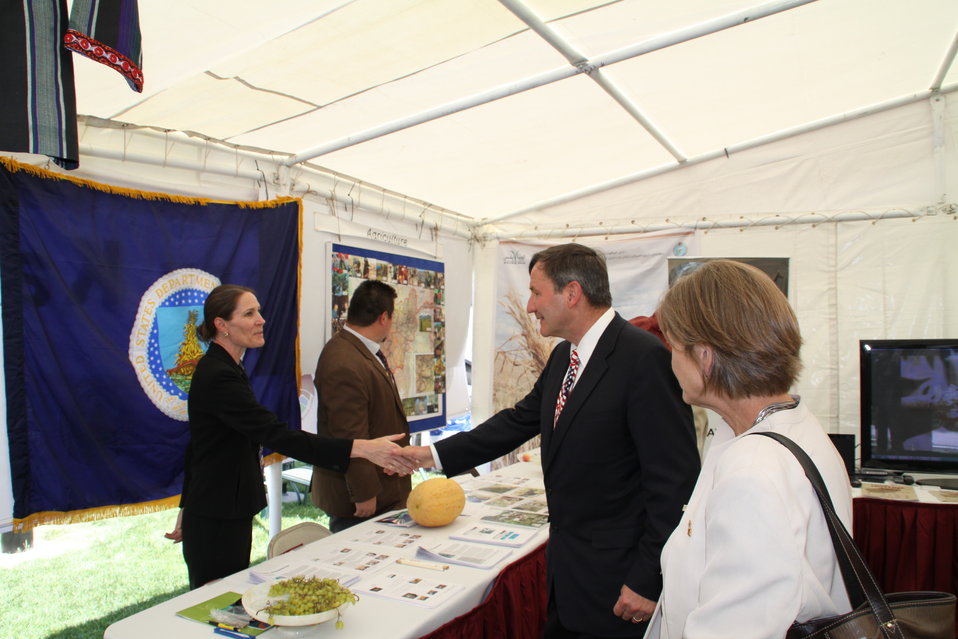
Kabul Official July 4th Celebration